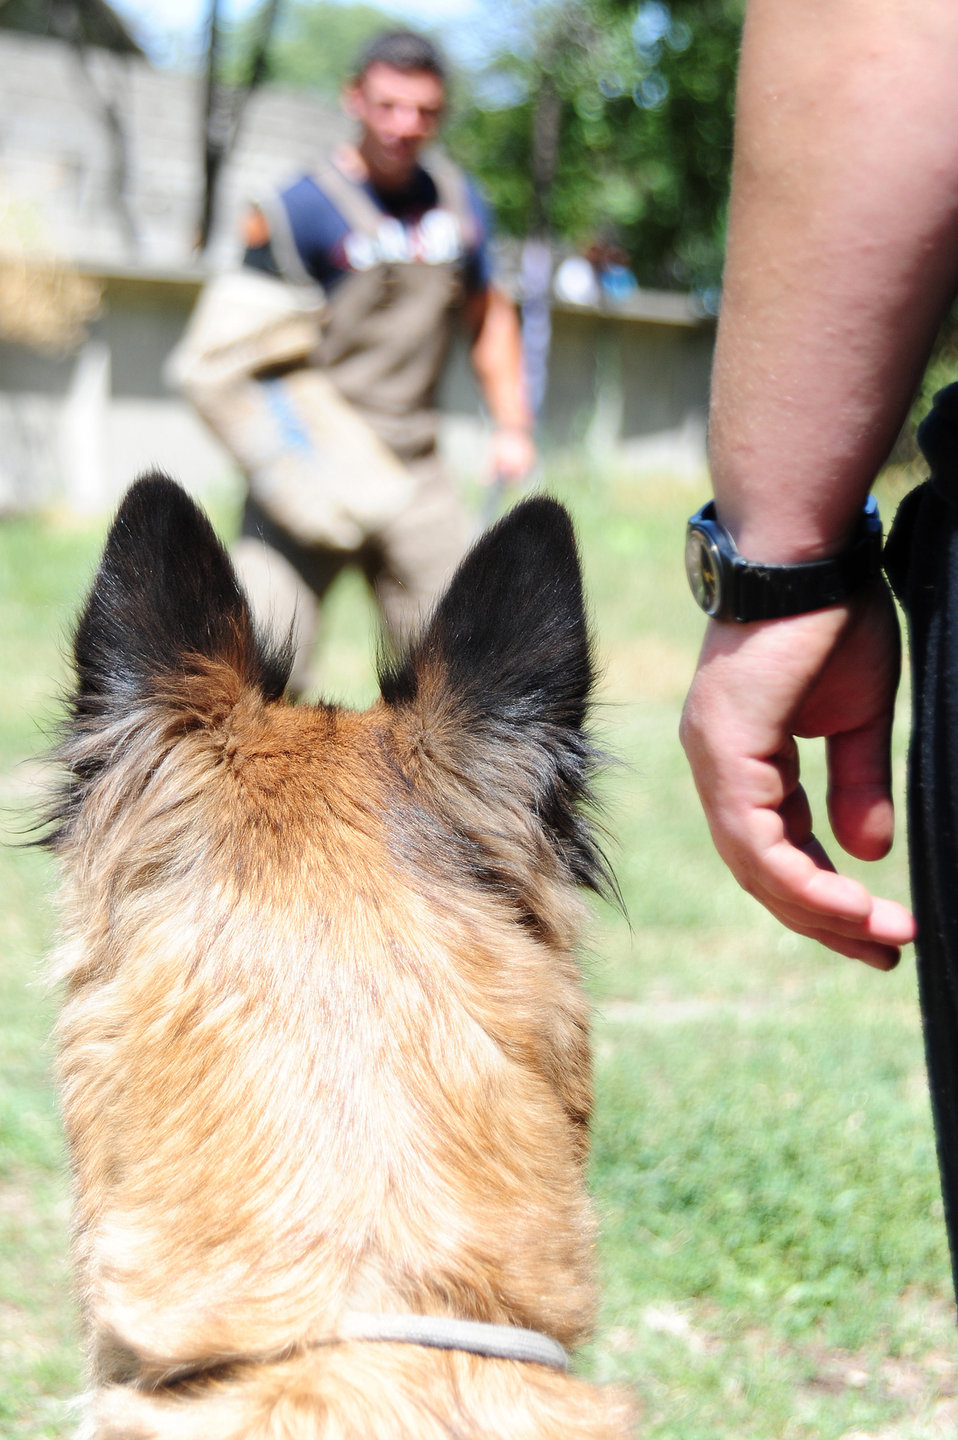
Airmen partner with Kyrgyz security service K-9 team

Kyrgyzstan State Security Service K-9 Vali waits for a controlled attack upon the decoy aggressor Joseph Villalobos during exercises Aug. 7 in Bishkek, Kyrgyzstan. Transit Center at Manas, Kyrgyzstan, military working dog handlers have been training with the Kyrgyzstan State Security Service for over three years and have built a strong relationship with the Kyrgyz handlers. Mr. Villalobos is a 376th Expeditionary Security Forces Squadron military working dog trainer, originally from Sanger, Calif.